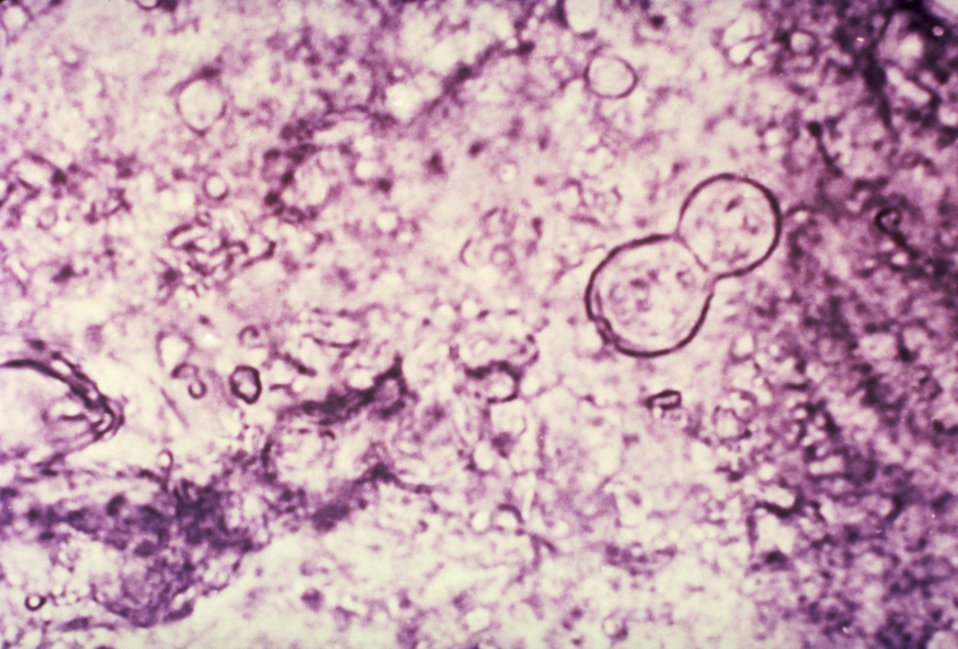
Smear from foot lesion of blastomycosis showing Blastomyces dermatitidis yeast cell undergoing broad-base budding.